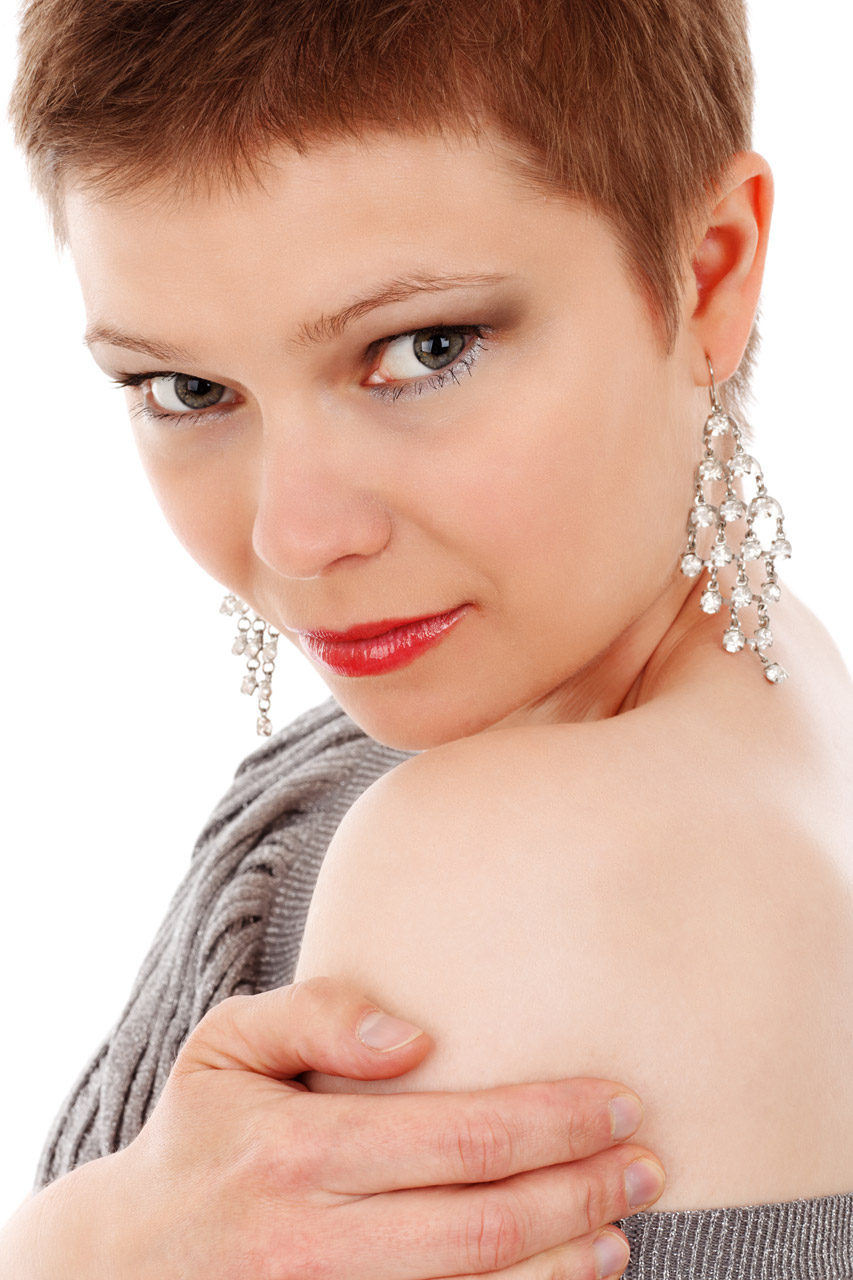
Fashion model jana svojsova looking over her shoulder.